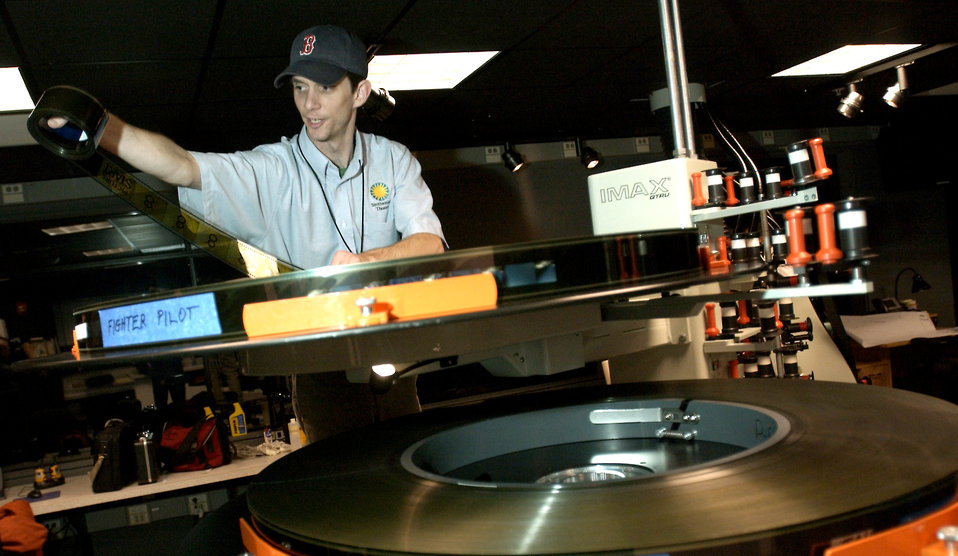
Fighter pilot film about teamwork, thrill of flight

CHANTILLY, Va. -- Peter Gabriel prepares to thread film from the new IMAX movie